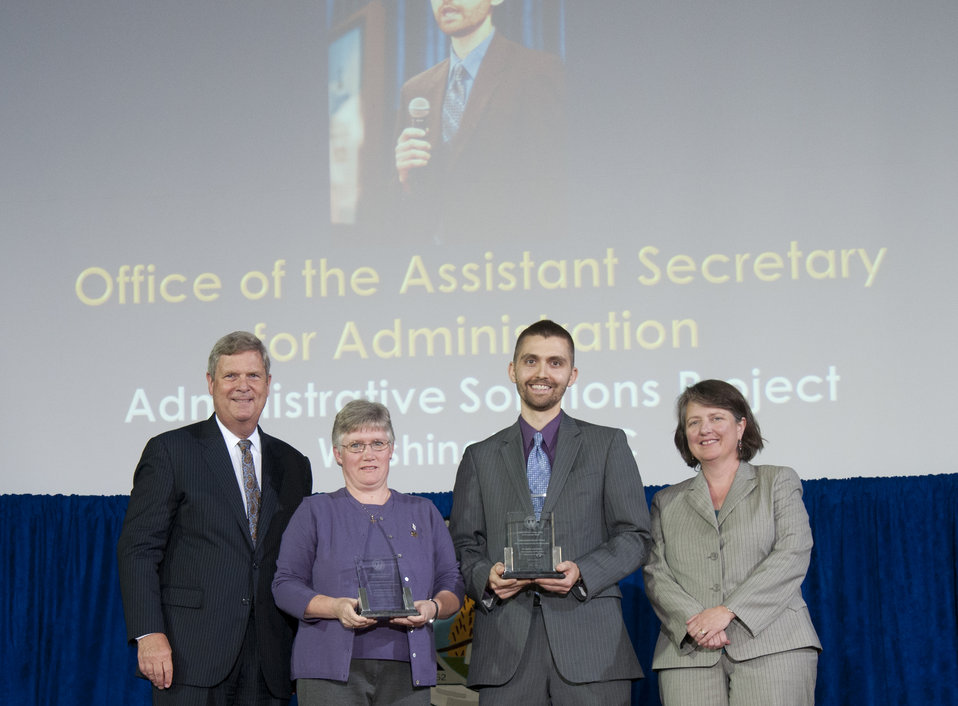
Agriculture Secretary Tom Vilsack and Agriculture Deputy Secretary Kathleen Merrigan present the Secretary’s Honor Award to the Administrative Solutions Project Office of the Assistant Secretary for Administration group leaders Melissa Baumann and Christopher Nelson at the U.S. Department of Agriculture (USDA) 64th Annual Honor Awards Ceremony in Washington, D.C. on Wednesday, Sept. 12, 2012. The Administrative Solutions Project strived to find solutions to make USDA administrative operations more efficient and effective through an engaged and collaborative approach while raising union and employee concerns.